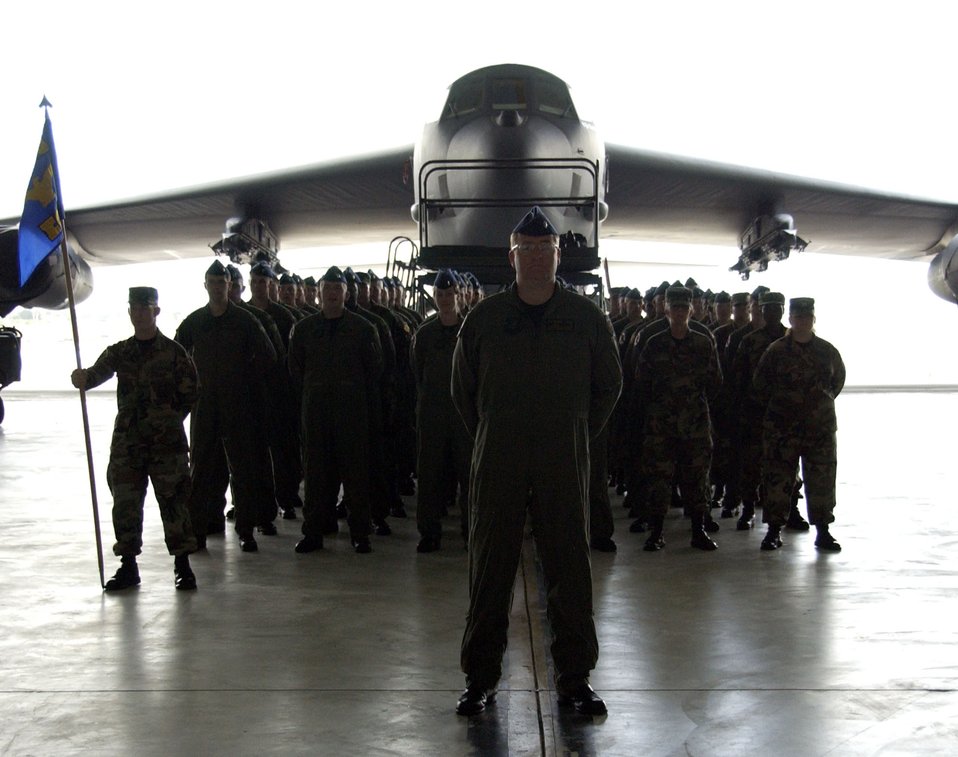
36th OG reactivates to meet Pacific theatre mission

Airmen assigned to the 36th Operations Group stand in formation during the unit's reactivation ceremony at Andersen Air Force Base, Guam, Feb. 12. Six B-52 Stratofortress bombers from the 2nd Bomb Wing at Barksdale AFB, La., are deployed there to provide a continuous bomber presence in the Asia-Pacific region.